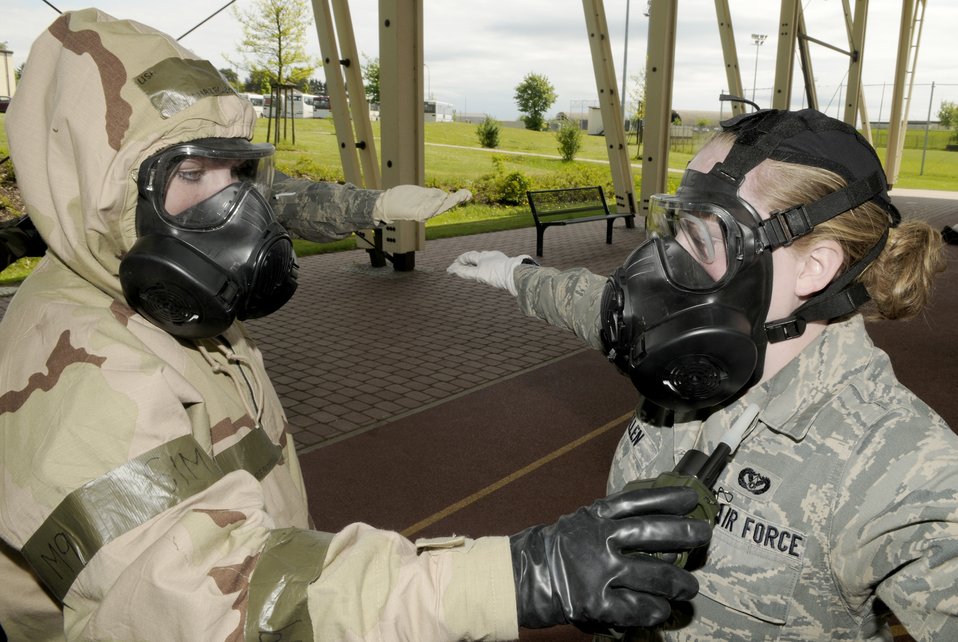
Airmen practice contamination control

Airman 1st Class Ashley Charfauros uses a joint chemical agent detector to check for